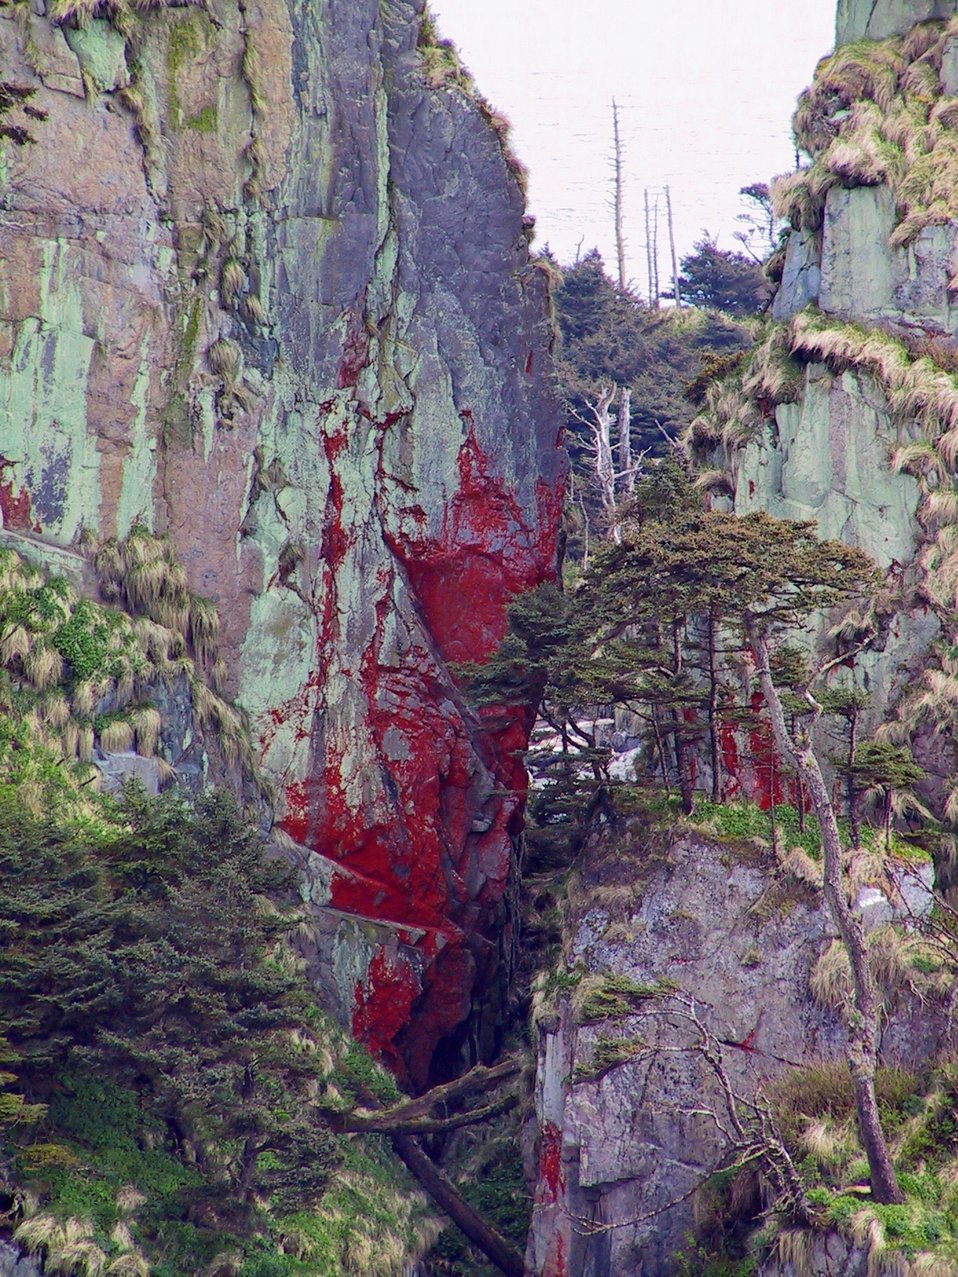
Possibly red lichen covering cliff in Southeast Alaska